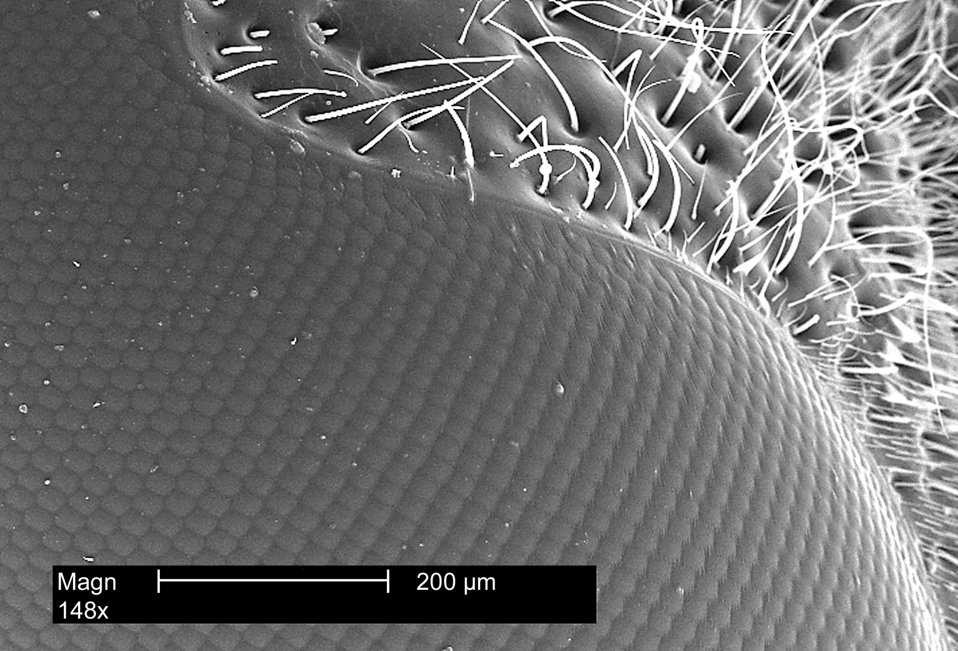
An electron micrograph of a wasp's head region and the insect's compound eye, magnified 148x.